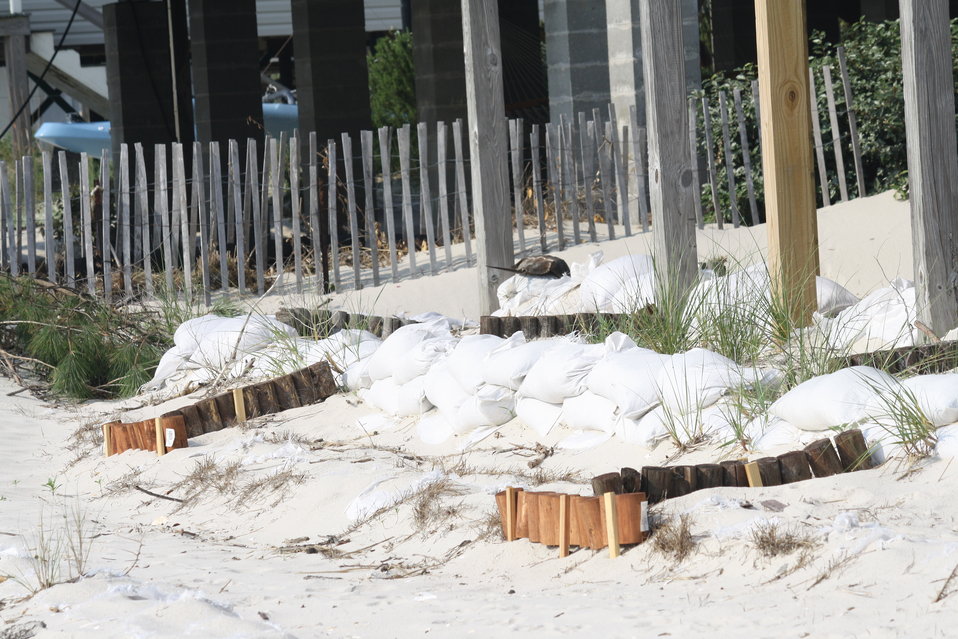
Bavon Beach project

Some residents have felt the need to place sand bags on the waterfront sides of their homes to guard against rising waters from storms.